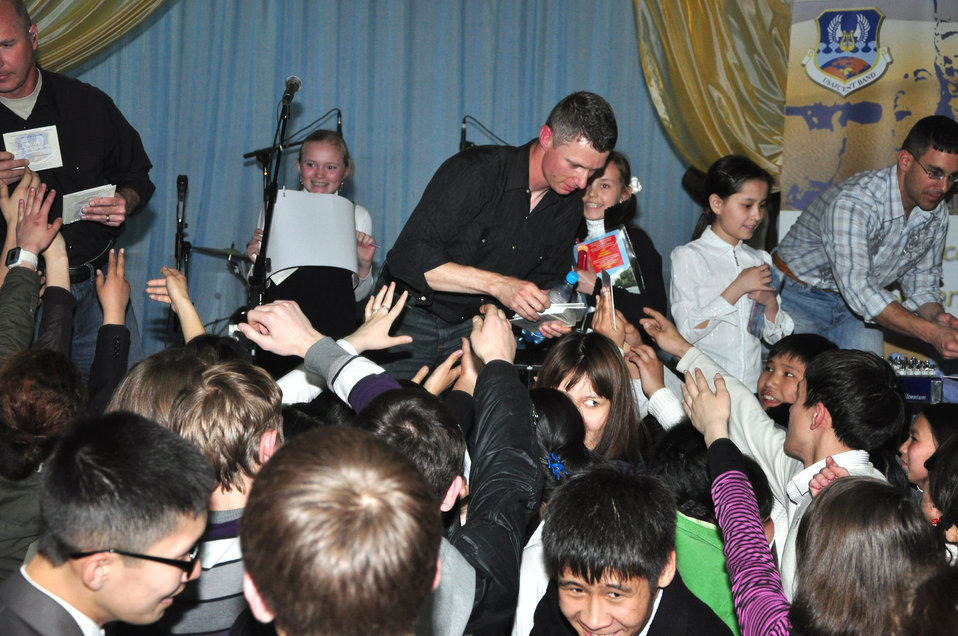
AFCENT band entertains Kyrgyzstan youth

Tech. Sgt(s) Tim Stombaugh and Jeff Valentine give students CDs April 1, 2011, at a school in Bishkek, Kyrgyzstan, after their performance.